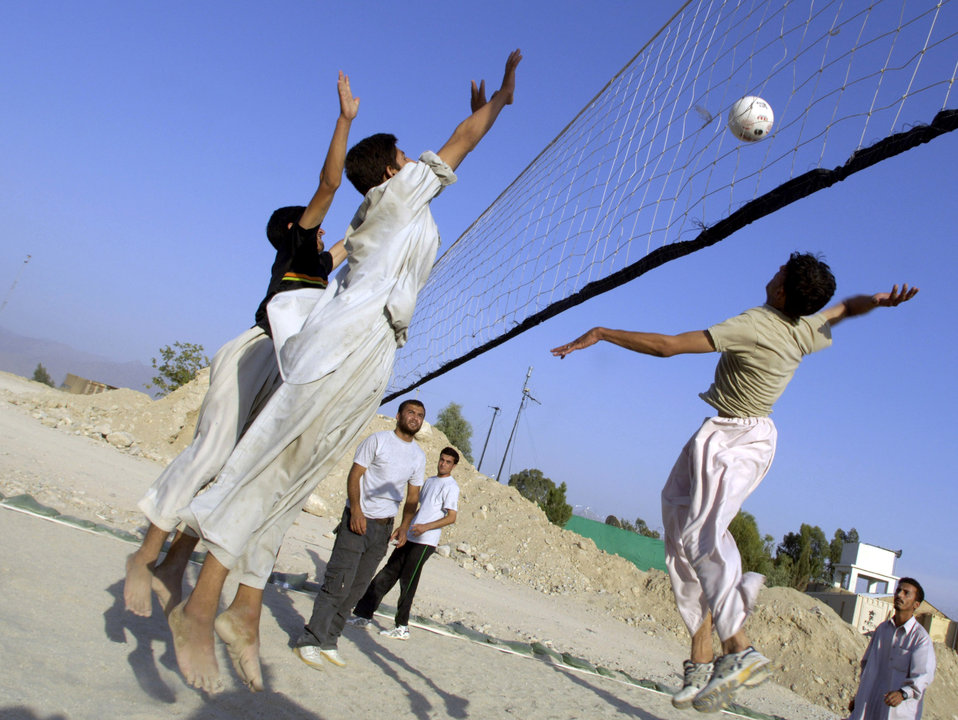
Volleyball unites Afghans, Americans

Airmen and Soldiers from the Provincial Reconstruction Team host a volleyball game Aug. 26 for Afghan high school students invited from the province's five districts Aug. 26 at Forward Operating Base Mehtar Lam, located in Afghanistan's Laghman Province. The weekly volleyball games are designed to give the students a chance to meet and interact with military members in a friendly atmosphere.